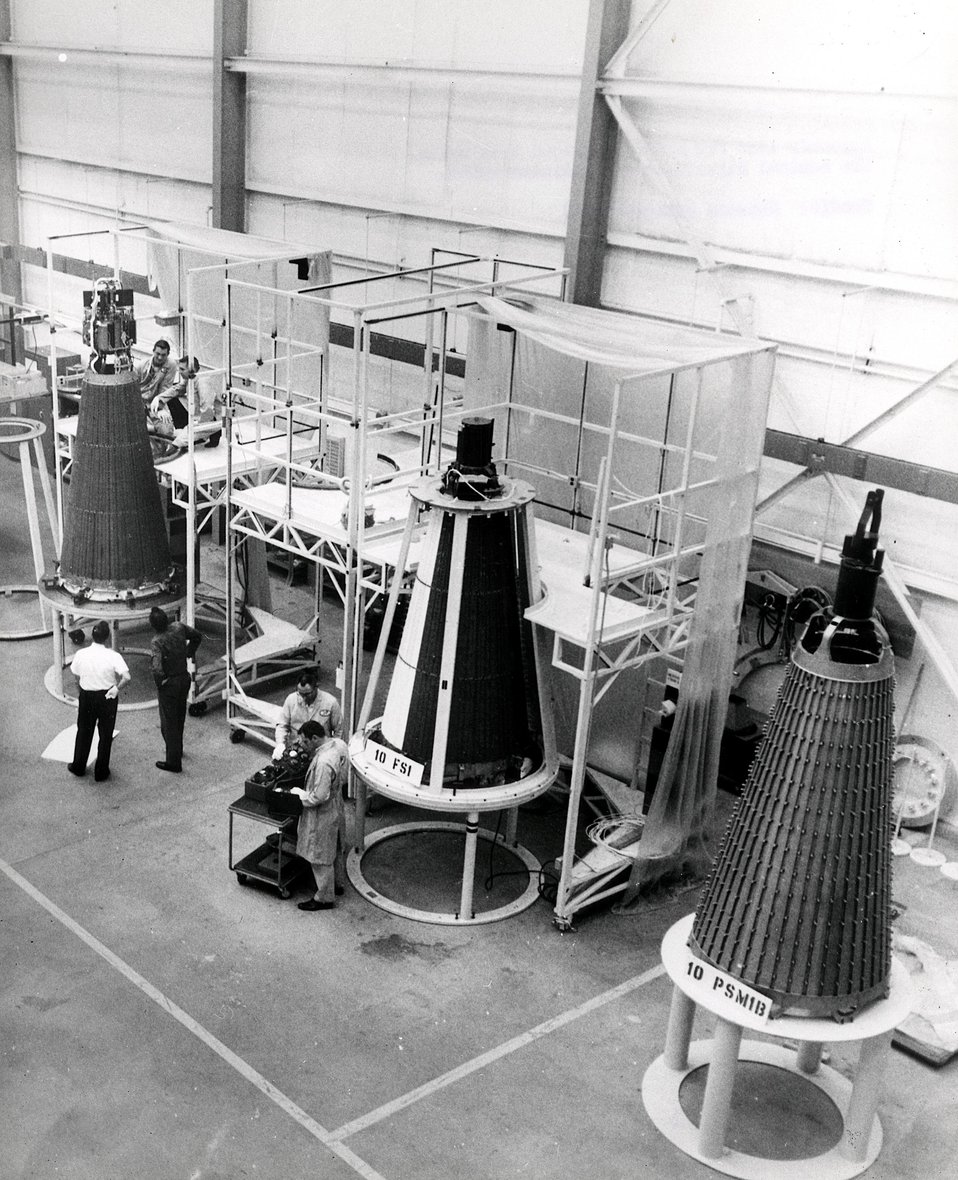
Assembly line for SNAP 10A ground test units.